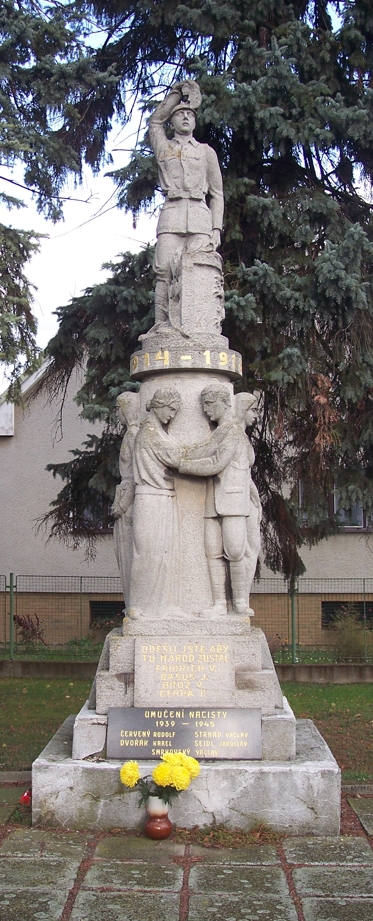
Čeština: Velenka, okres Nymburk. Památník věnovaný padlým spoluobčanům v 1. a 2. světové válce.